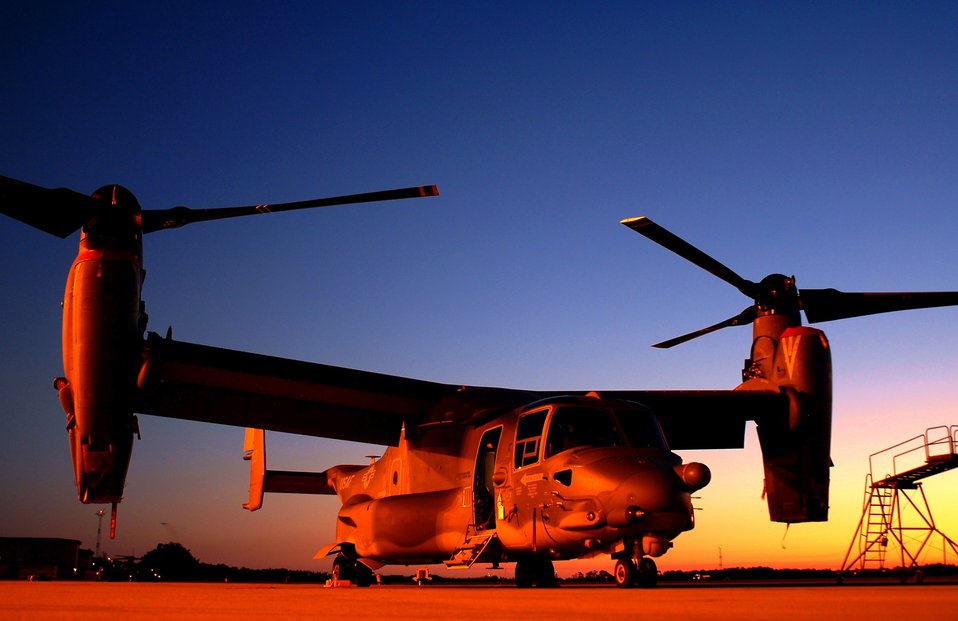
Osprey at sunset

A CV-22 Osprey awaits its next mission on the ramp at Hurlburt Field, Fla. The tilt-rotor Osprey, which has the speed of a conventional airplane and the ability to hover like a helicopter, gives warfighters the ability to perform missions that would otherwise require both fixed-wing and rotary-wing aircraft.